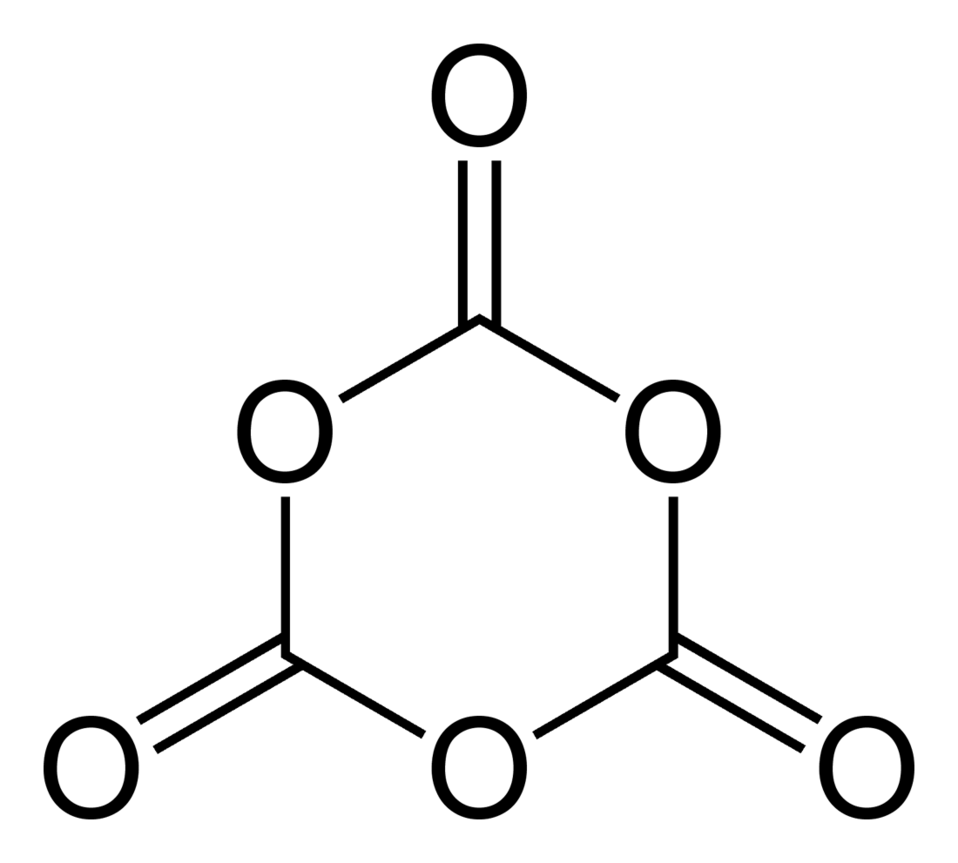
Skeletal formula of the 1,3,5-trioxanetrione molecule, C3O6. Structure drawn in ChemDraw Ultra 11.0.